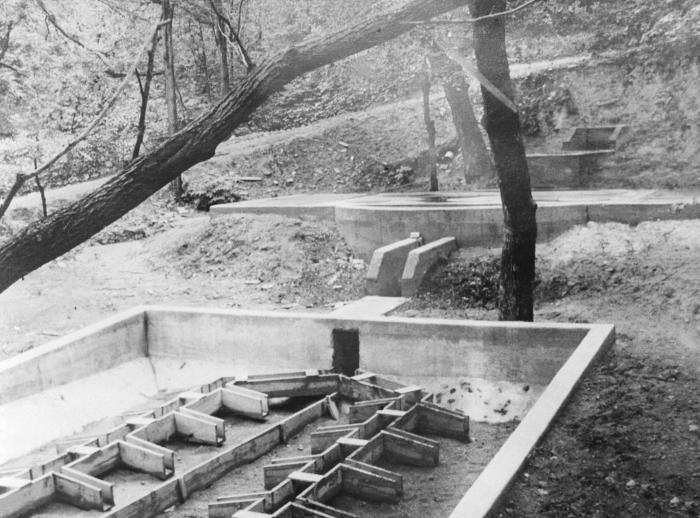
This historic 1915 photograph depicted a sludge drying bed, which was part of the sewage treatment system that was located near Faribault, Minnesota at a school for the mentally challenged. It was in this plant, where sewage sludge was separated from liquid waste inside an Imhoff tank system.